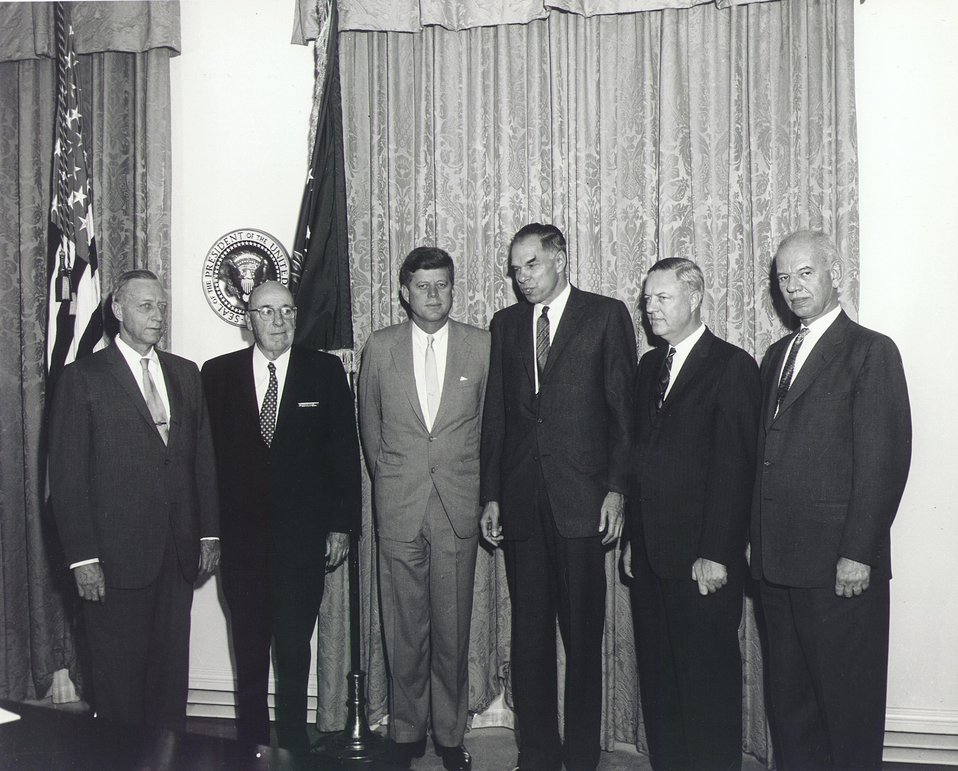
Fermi Award Ceremony for Dr. Bethe in Washington on Dec. 1, 1961.